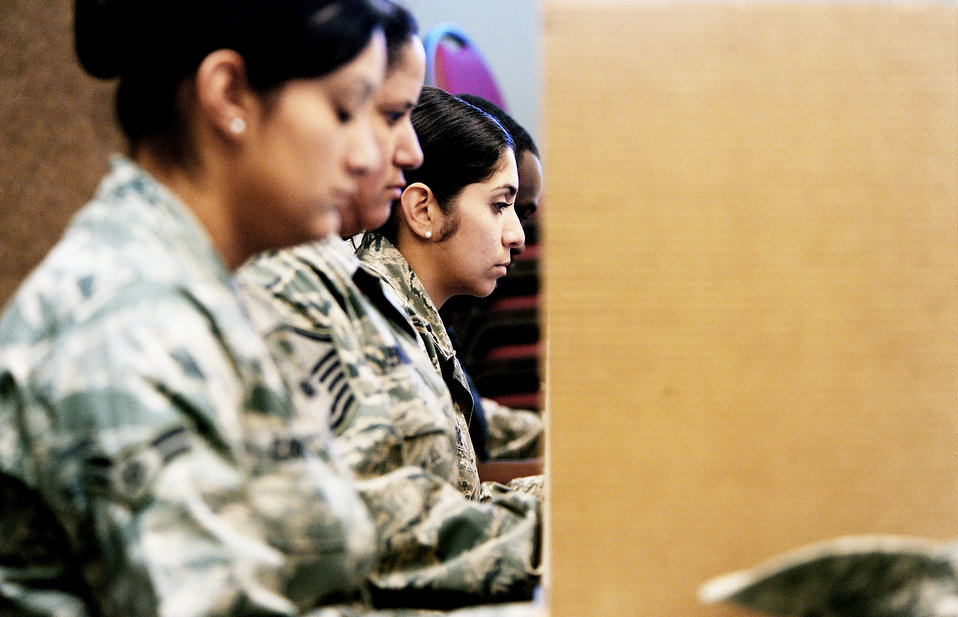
Army mobility team visits Moody, conducts metrics test

Airmen test their memory skills during a portion of the Automated Neuropsychological Assessment Metrics test Nov. 5, 2009, at Moody Air Force Base, Ga. An Army team visited Moody AFB to help conduct a mass ANAM testing for more than 800 Airmen. The test, which establishes a baseline for an individual's brain activity, is mandatory prior to deploying.